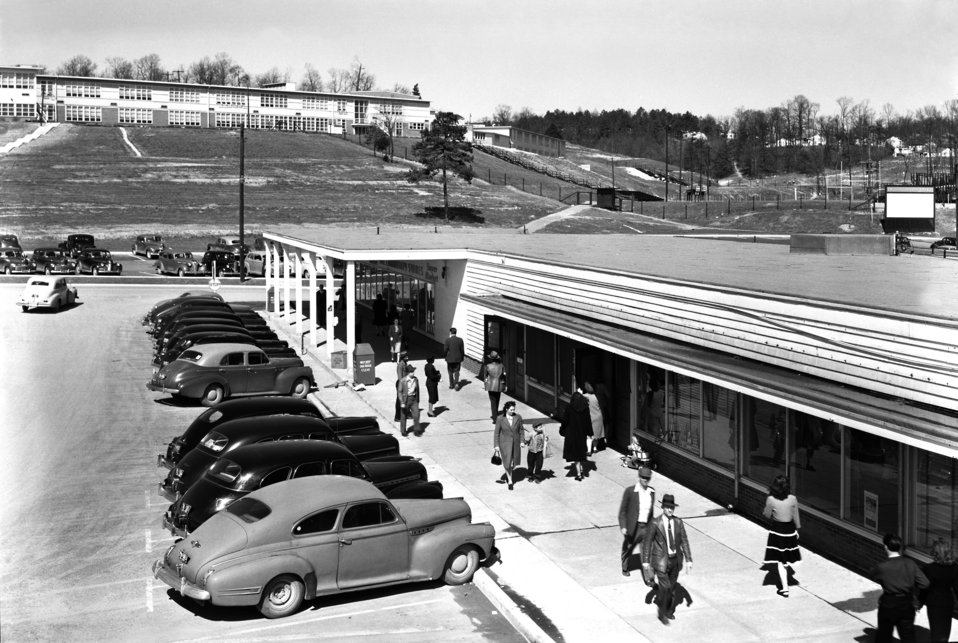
Jackson Square Shopping Center Oak Ridge 1948

4361 DOE photo Ed Westcott 3-6-1948 Oak Ridge Tennessee